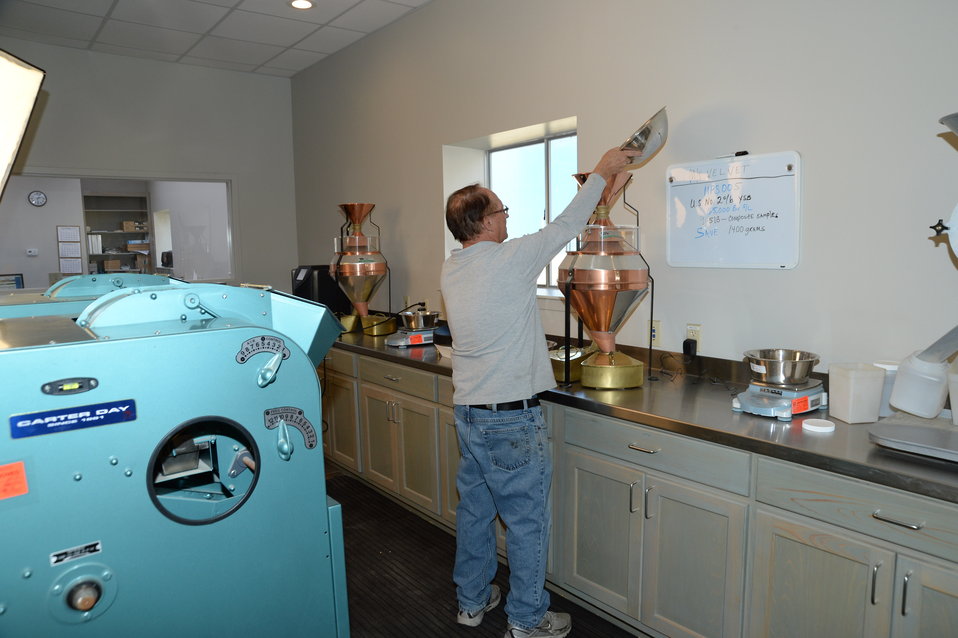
U.S. Department of Agriculture (USDA) Grain Inspection, Packers and Stockyards Administration (GIPSA) Federal Grain Inspection Service (FGIS) employee tests U.S. grain ready for export near the Port of New Orleans in New Orleans, LA on Tuesday, Nov. 19, 2013.